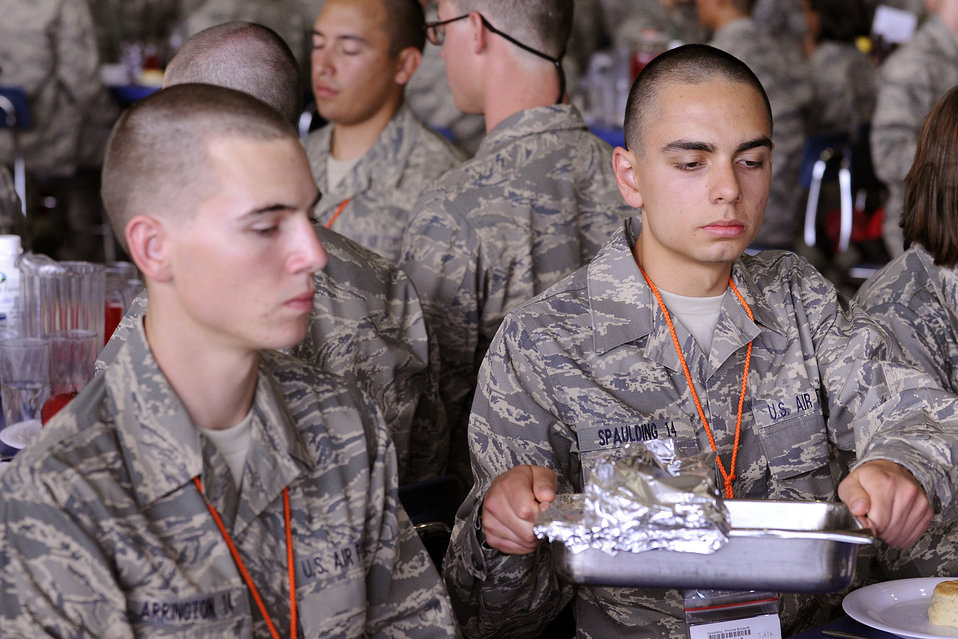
New Academy cadets learn dining 'traditions'

Basic cadet Preston Spaulding learns meal procedures during Class of 2014 Basic Cadet Training at the U.S. Air Force Academy, Colo., June 25, 2010.